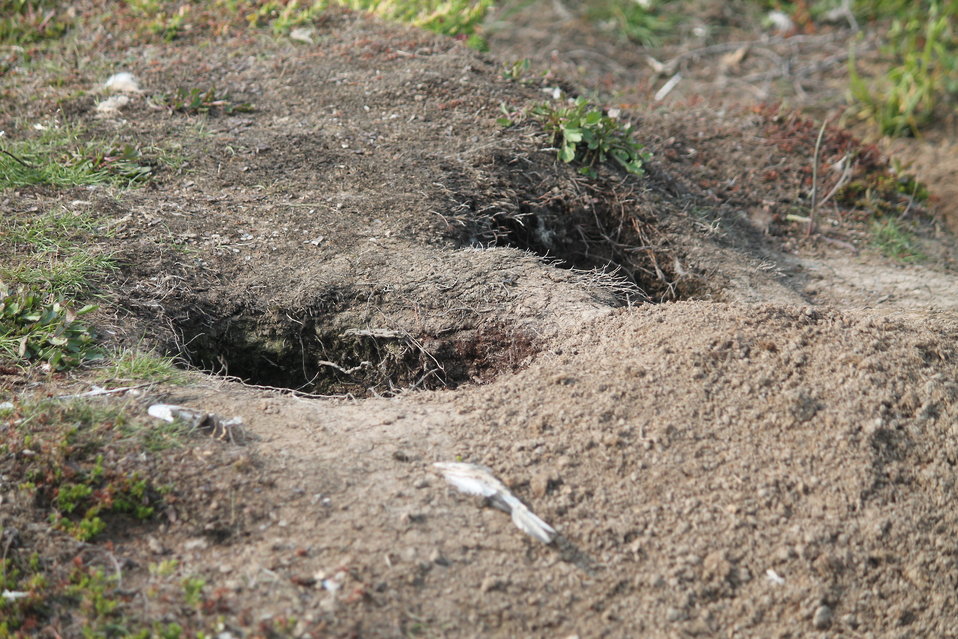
Arctic Fox Den

This fox den was monitored using trail cameras during the summer of 2012.

USFWS Yukon Delta NWR